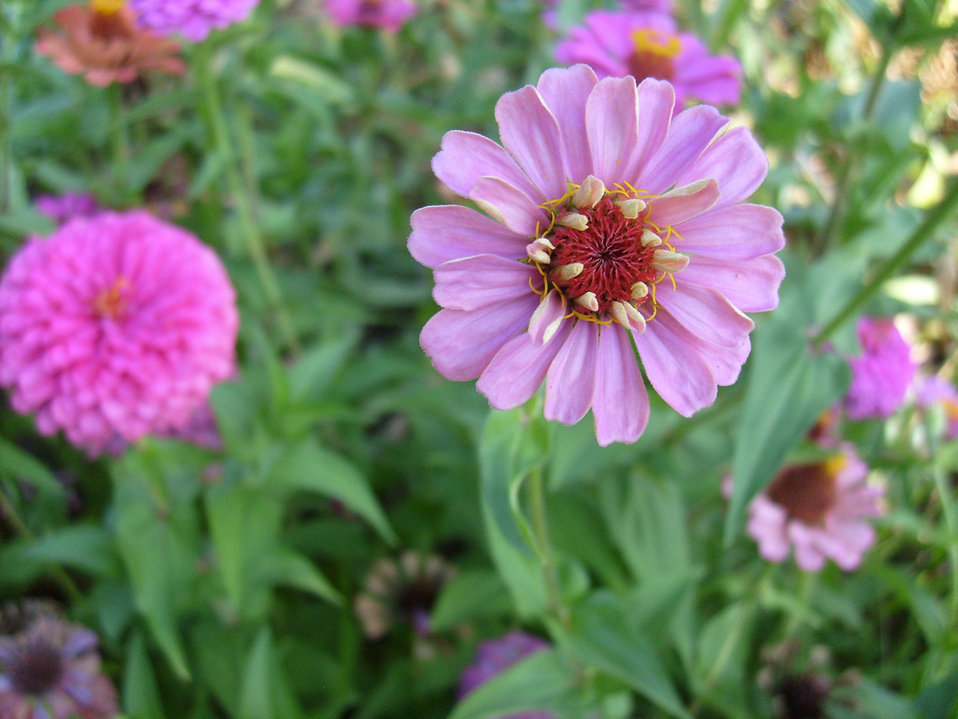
Pink flower.